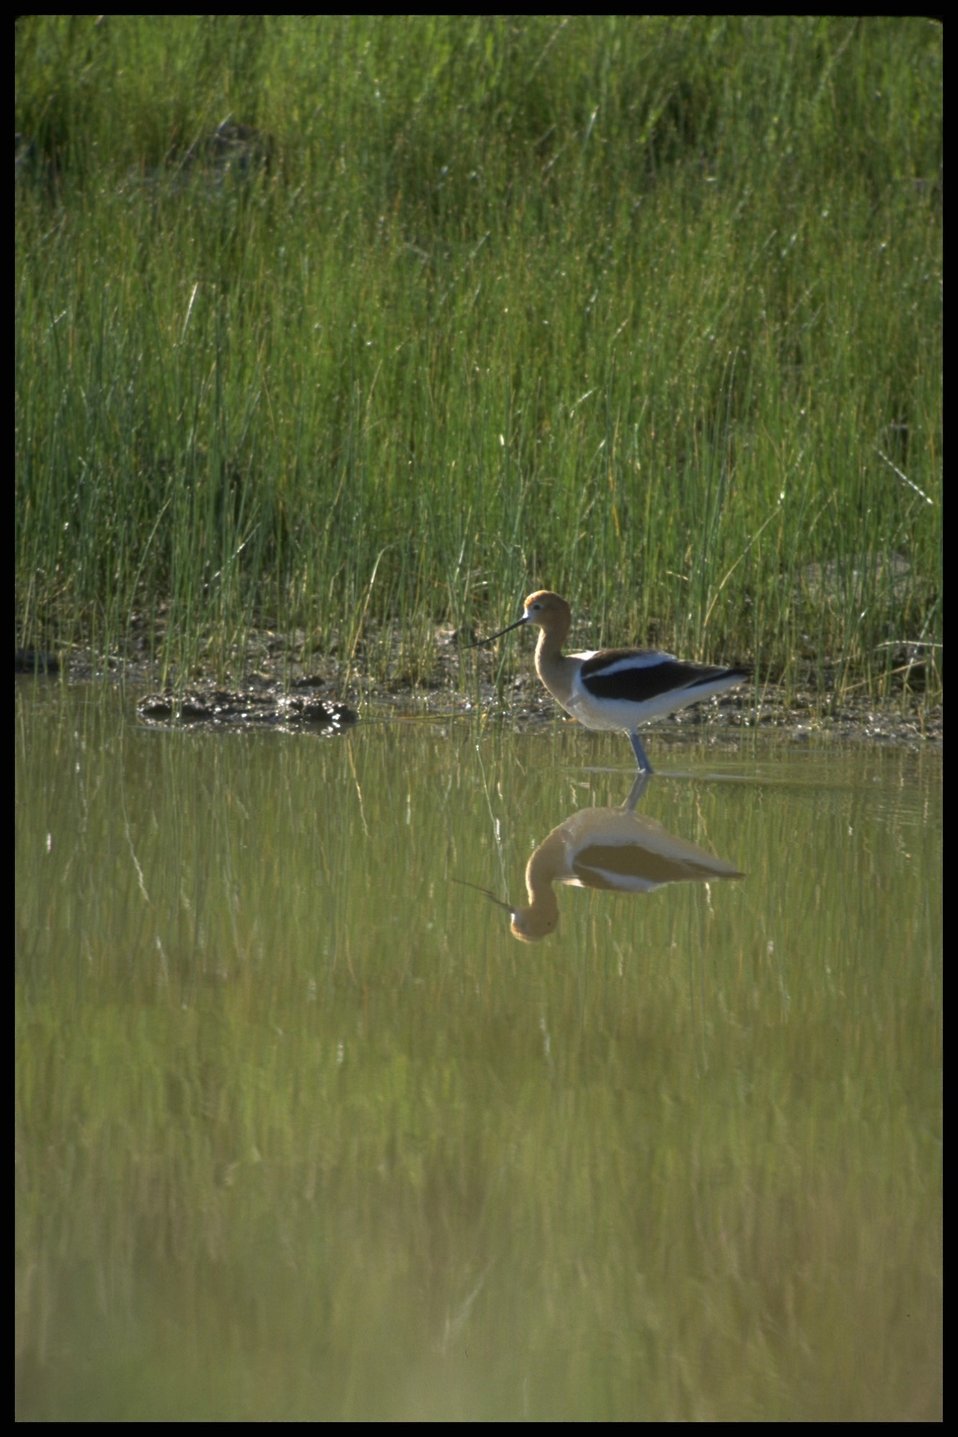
Unknown aquatic bird, Lakeview District.